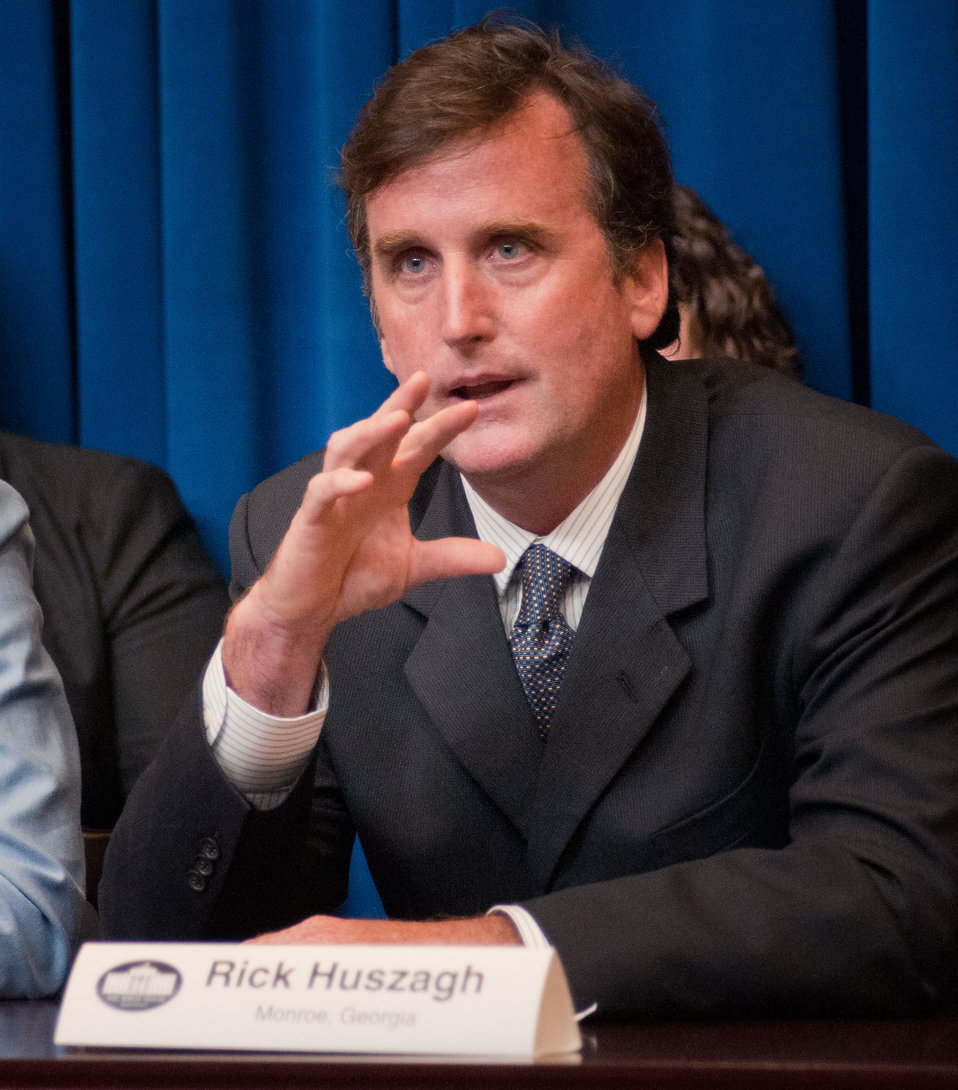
Rick Huszagh, Down to Earth Energy, GA, attended a meeting at the White House, in Washington, DC, on July 6, 2011. He was asked to participate along with President Barack Obama, Agriculture Secretary Tom Vilsack, the President's Domestic Policy Adviser Melody Barnes and rural communities leaders from across the country for the White House Rural Champions of Change event to strengthen rural communities and promote economic growth. When Rick Huszagh and wife Crista Carrell purchased part of the Carrell family farm in 1995, their focus was on farmland preservation as much as the creation of a successful business enterprise. Mountain Creek Farm started out selling Boer goats to purebred and commercial breeders and Bermuda hay to neighboring horse farms. Goat kids were raised each spring to sell for breeding stock or meat. The couple improved their farm marketing by participating in shows, performance tests, and field days. The farm’s proximity to the University of Georgia facilitated their involvement in herd management studies related to the control of internal parasites. They took full advantage of resources offered by the Cooperative Extension Service and the Natural Resources Conservation Service, and participated in the Environmental Quality Incentives Program (EQIP). Rick and Crista’s interest in sustainability issues on the farm led them to research and implement small-scale biodiesel production for the tractors in 2005. In 2006, they intensified their renewable energy involvement when they were awarded a Renewable Energy for America Program (REAP) grant and USDA guaranteed loan. Along with like-minded partners, they established Down to Earth Energy, a commercial biodiesel production facility located adjacent to the farm. Concern with some of the inefficiencies in the biodiesel process led them to partner with the University of Georgia to develop a more effective catalyst. The concept was further funded by an EPA Small Business Innovation Research Grant (SBIR) and a Venturelab grant. Crista was appointed a Walton County Soil and Water Conservation District Supervisor in 2006. She has spearheaded the district’s sponsorship of community forestry activities in Monroe and served as the coordinator of Atha Road Elementary School’s outdoor classroom from 2003-2011. Her work as a district supervisor led to her being hired as the first full-time Executive Director of the Georgia Association of Conservation District Supervisors (GACDS) in 2007.